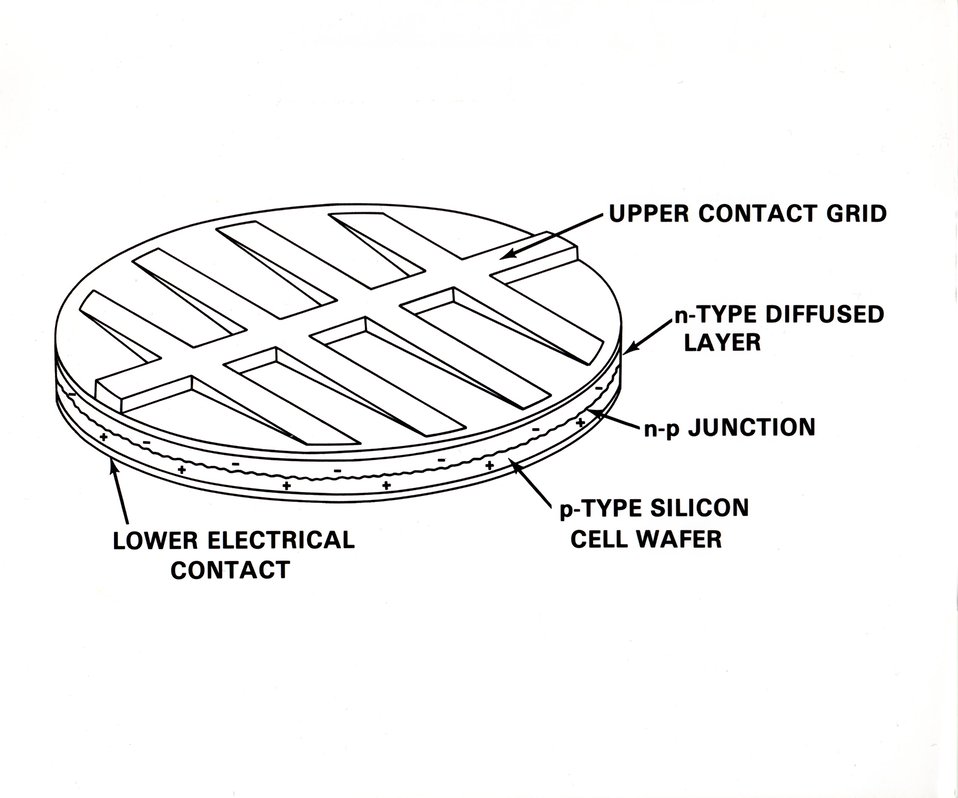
Military Applications of Photovoltaic Systems (MAPS) program is being held to demonstrate the feasibility of powering tactical equipment as well as remote instrumentation sites with photovaltaic solar cells. c. 1977